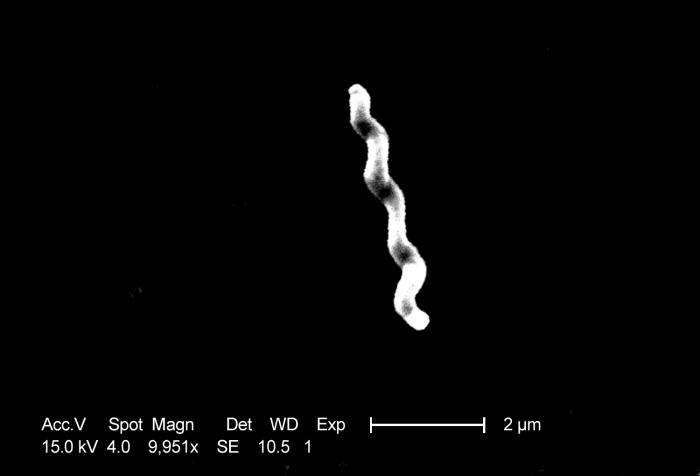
This scanning electron micrograph depicts a number of Gram-negative Campylobacter jejuni bacteria, magnified 9,951x.